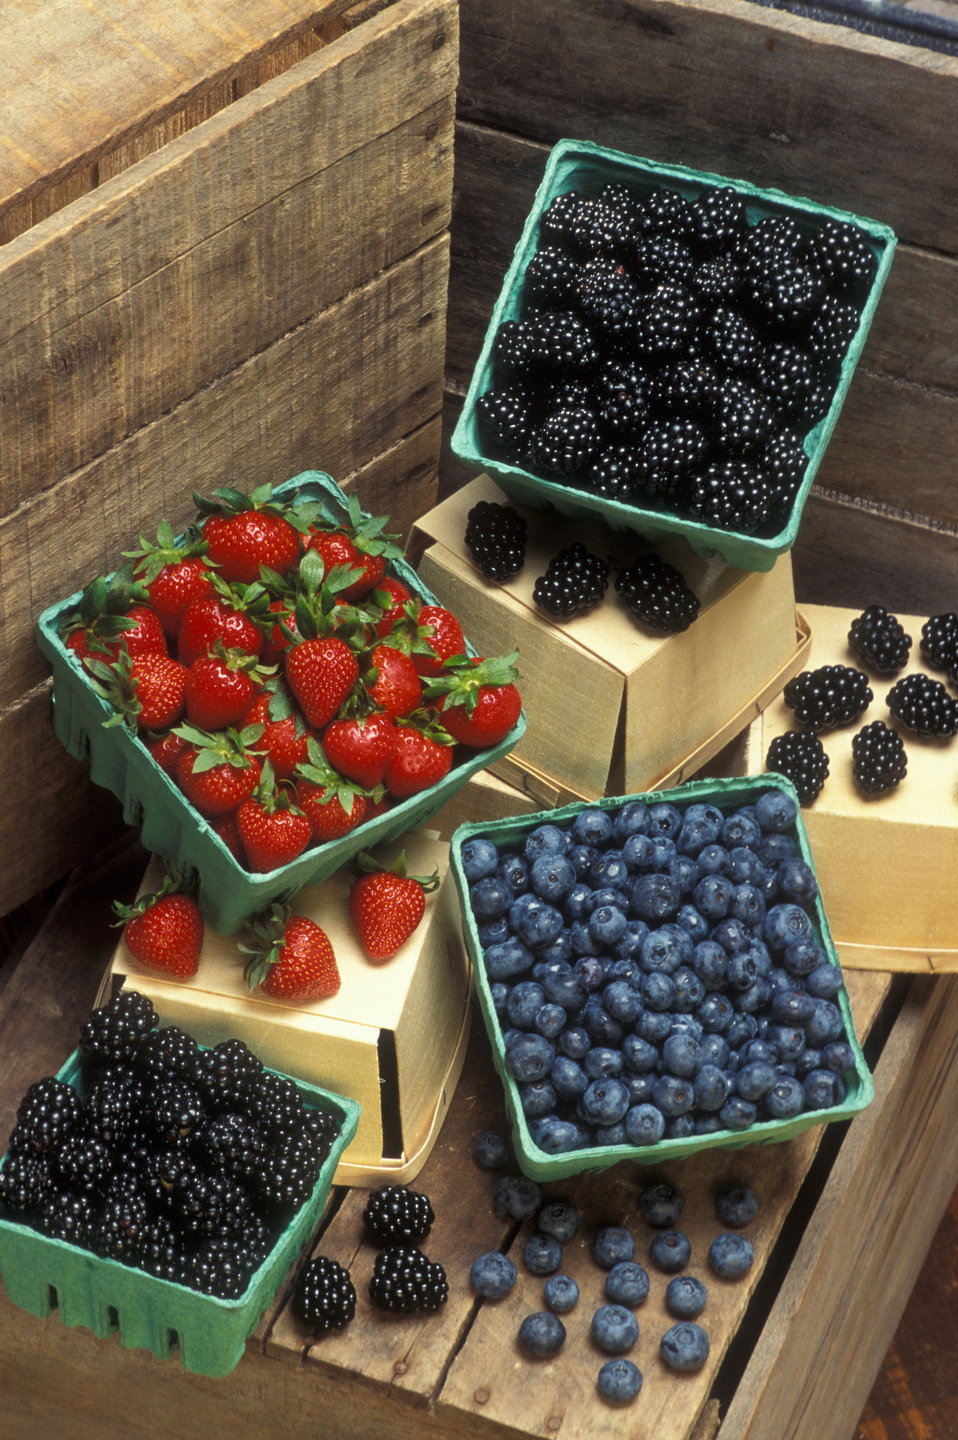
Boxes of berries sit on stand at a market on May 8, 2007. Berries are difficult to grow, harvest, and handle with brief growing seasons and the berries are vulnerable to insects, disease, and even birds. In the 1950's, the U.S. Department of Agriculture’s (USDA) Agricultural Research Service (ARS) actually saved the strawberry industry in the Great Lakes region when the agency released the first varieties that could survive red stele, a root-rotting fungus. Fifteen years ago, blueberries were practically nonexistent in the Gulf States. But USDAS’s ARS early-ripening varieties have extended highbush blueberry culture to the Deep South. Today, over 10,000 acres are grown in Dixie, with more than 4,000 acres thriving throughout Texas, Louisiana, and Alabama. In the Pacific Northwest, where most of America’s red raspberries are grown, Willamette, a 1943 release, still accounts for 40 percent of the red raspberry acreage. USDA ARS scientists introduced the first truly genetic thornless blackberries, Thornfree and Smoothstem, which caused a small roadside revolution. The new varieties were just what some growers needed to establish pick-your-own operations.